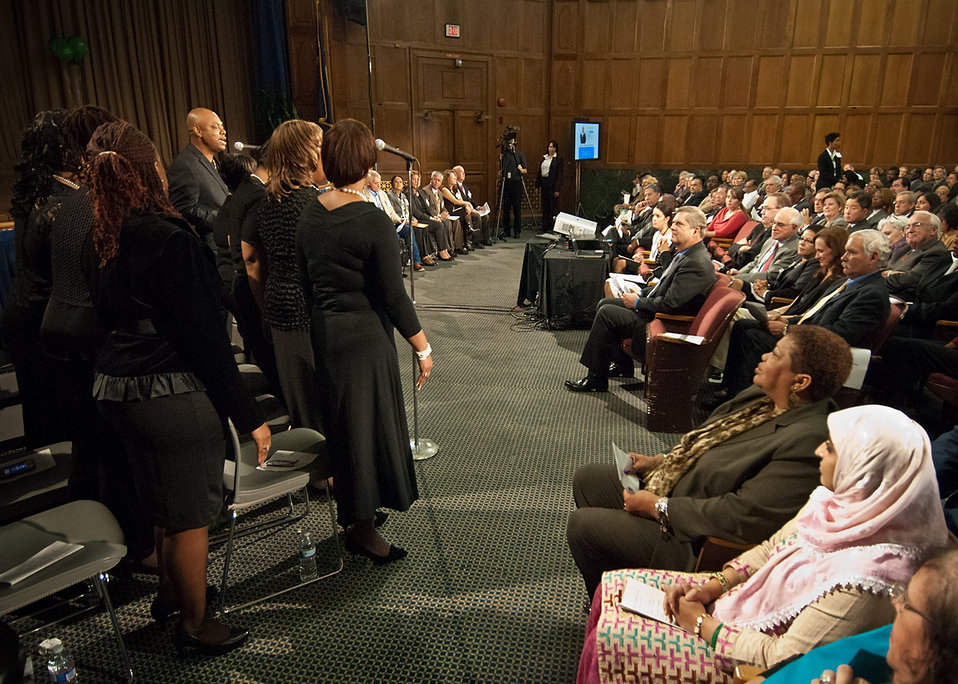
Agriculture Secretary Tom Vilsack listens to the Blacks in Government (BIG) Choir during the Cultural Transformation Recognition Ceremony at the Jefferson Auditorium, US Department of Agriculture in Washington, DC, on Tuesday, October 4, 2011. Cultural Transformation is the process of creating a workplace where all employees and customers are treated with dignity, respect and the opportunity for success. Recognizing the important contributions of all employees to the operation of the United States Department of Agriculture. The goal of cultural transformation is to get everyone at USDA – from the Under Secretaries to employees at every grade level, in every location - to ensure USDA is a place where there’s opportunity for all to reach their full potential. Only then can USDA provide its customers with exceptional service in an equitable manner.